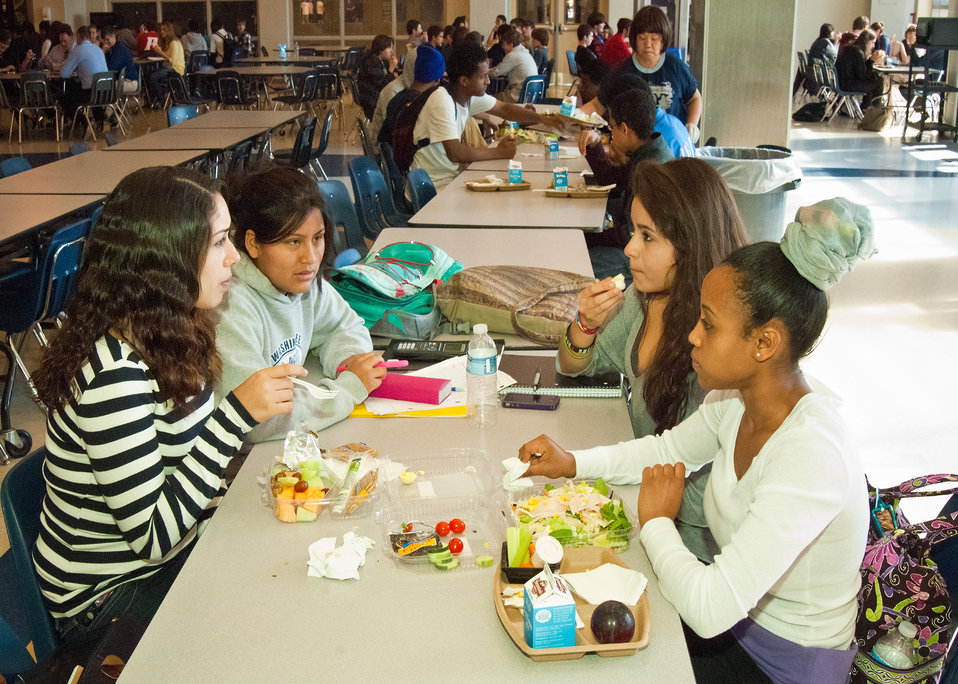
From left: Rime Jabbara, Karina Clavre, Gladys Castellon, Martha Gebru, students at Washington-Lee High School in Arlington, Virginia enjoy fresh salads for lunch on Wednesday, October 25, 2011. The National School Breakfast and National School Lunch Programs are federally assisted meal programs administered by the United States Department of Agriculture, Food and Nutrition Service operating in public, nonprofit private schools and residential child care institutions. It provides nutritionally balanced, low-cost or free breakfasts and lunches to children each school day.